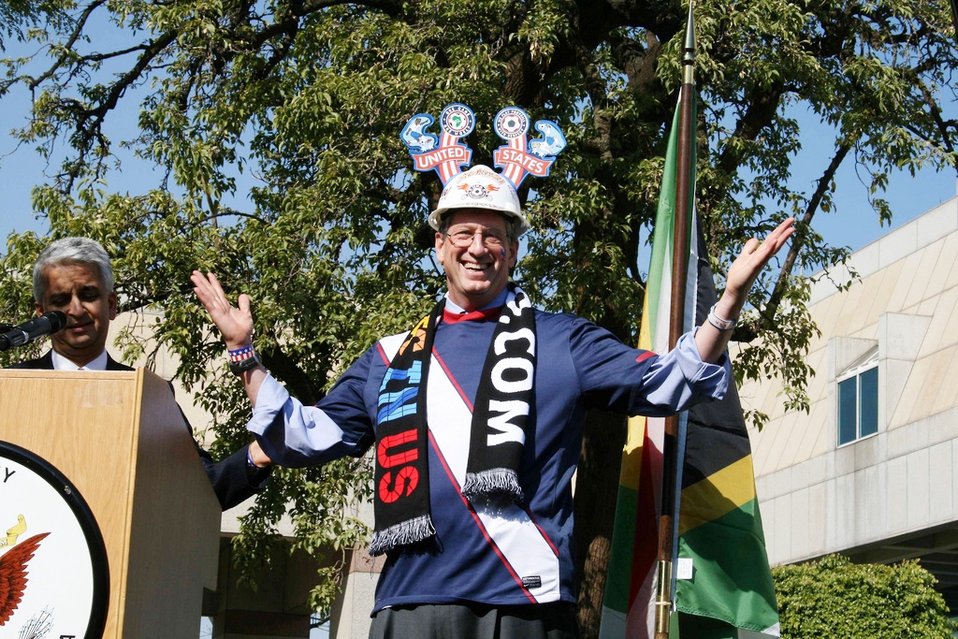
Ambassador Gips Shows His Team Spirit

U.S. Ambassador to South Africa Donald Gips shows his team spirit at the Team USA pep rally before the U.S. vs. Algeria World Cup match on June 23, 2010, in Pretoria, South Africa.